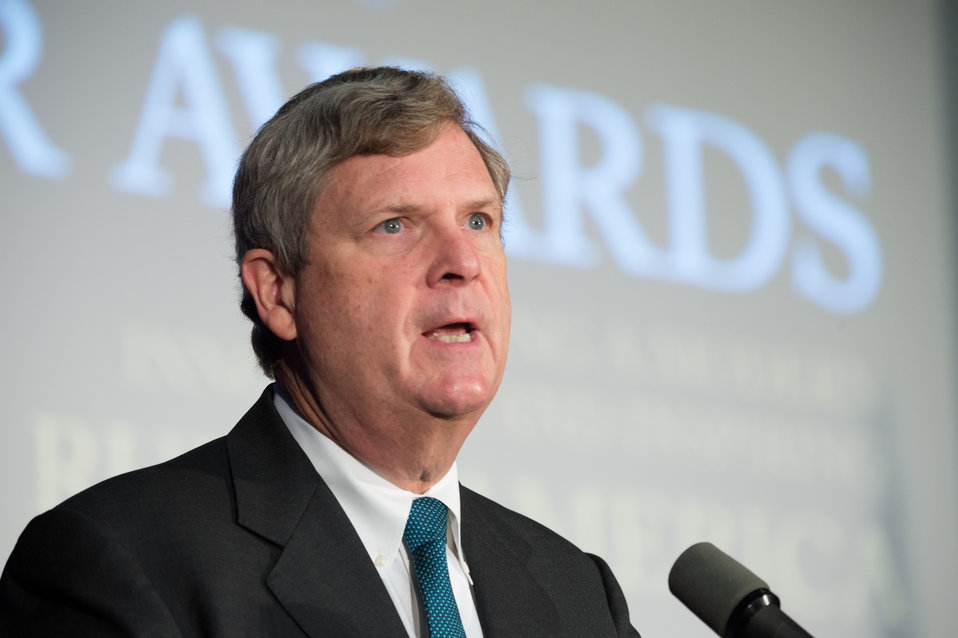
Agriculture Secretary Tom Vilsack speaks at the 65th Annual Secretary’s Honor Awards “Serving A Modern Innovative and Inspiring Rural America” in the Jefferson Auditorium at the U.S. Department of Agriculture (USDA) in Washington, D.C. on Wednesday, Dec. 11, 2013.